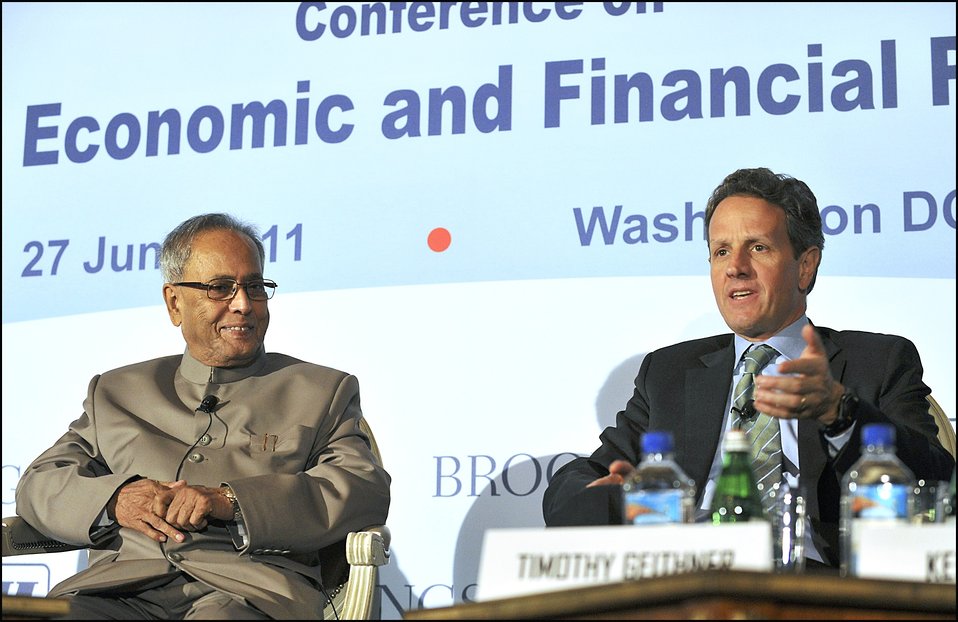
2011 U.S.-India Partnership

This week, Secretary Tim Geithner hosted Indian Finance Minister Pranab Mukherjee in Washington for the second annual meeting of the U.S.-India Economic and Financial Partnership. Here, Geithner and Mukherjee participate in a forum hosted by the Confederation of Indian Industry and the Brookings Institution in Washington.